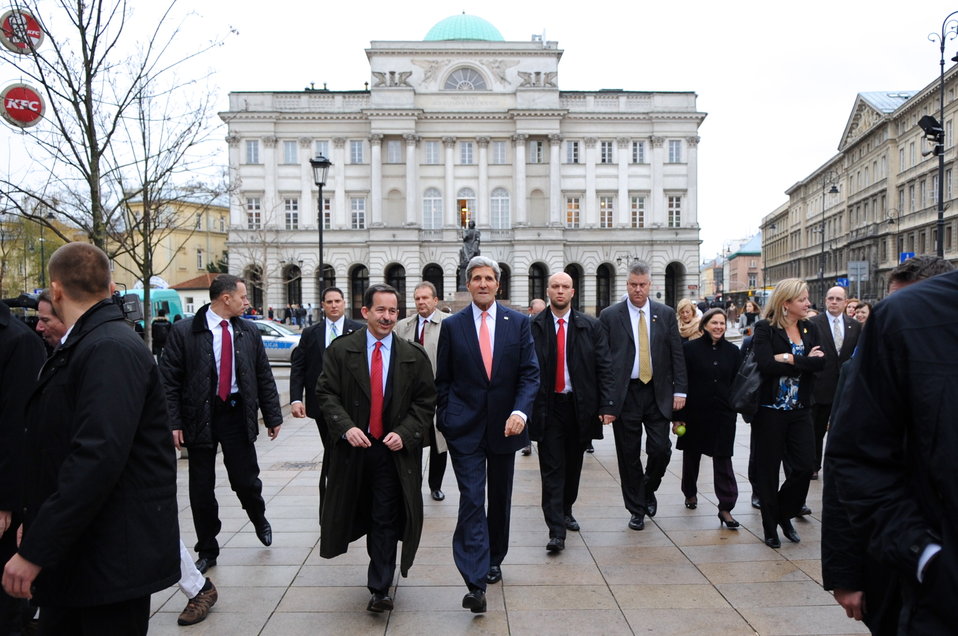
Secretary Kerry, Ambassador Mull Leave the Copernicus Statue In Warsaw

U.S. Secretary of State John Kerry and U.S. Ambassador to Poland Stephen Mull walk away from a statue of philosopher Copernicus as they begin a walking tour of downtown Warsaw, Poland, on November 5, 2013.